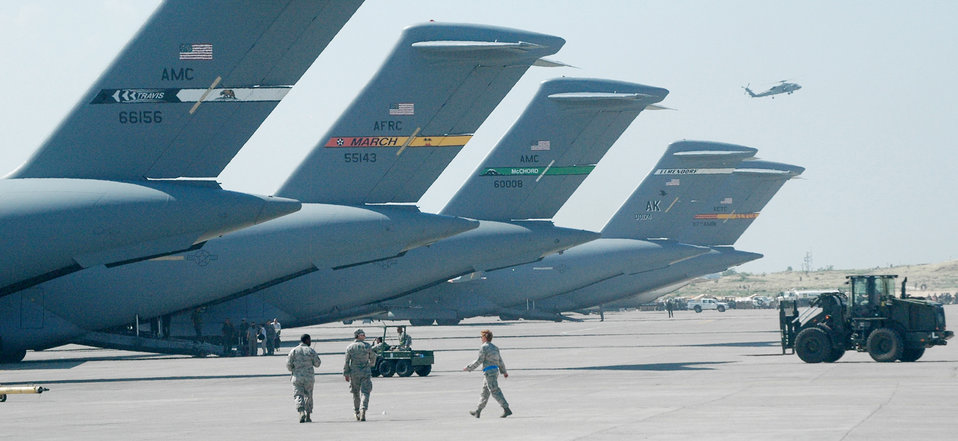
Airman sees Haiti scene unfold from under the brim of many hats

Airmen download C-17 Globemaster IIIs from five different Air Force bases on the ramp at Toussaint L'Ouverture International Airport Jan. 20, 2010, in Port-au-Prince, Haiti. Airmen delivered aid and rescue teams in the aftermath of a 7.0 magnitude earthquake that devastated Haiti.